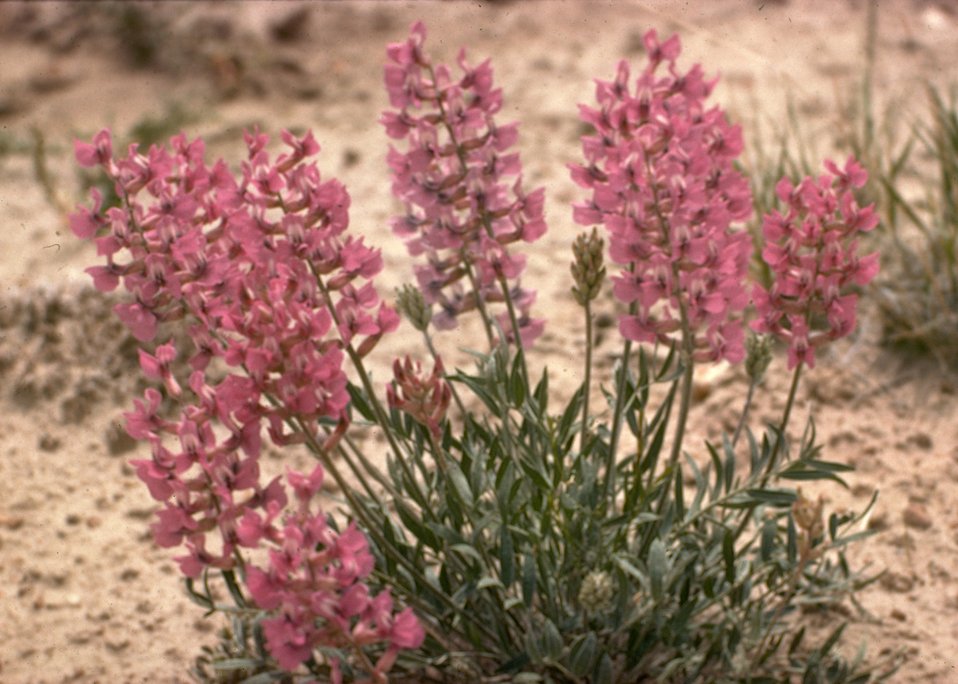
Desert flowerl.